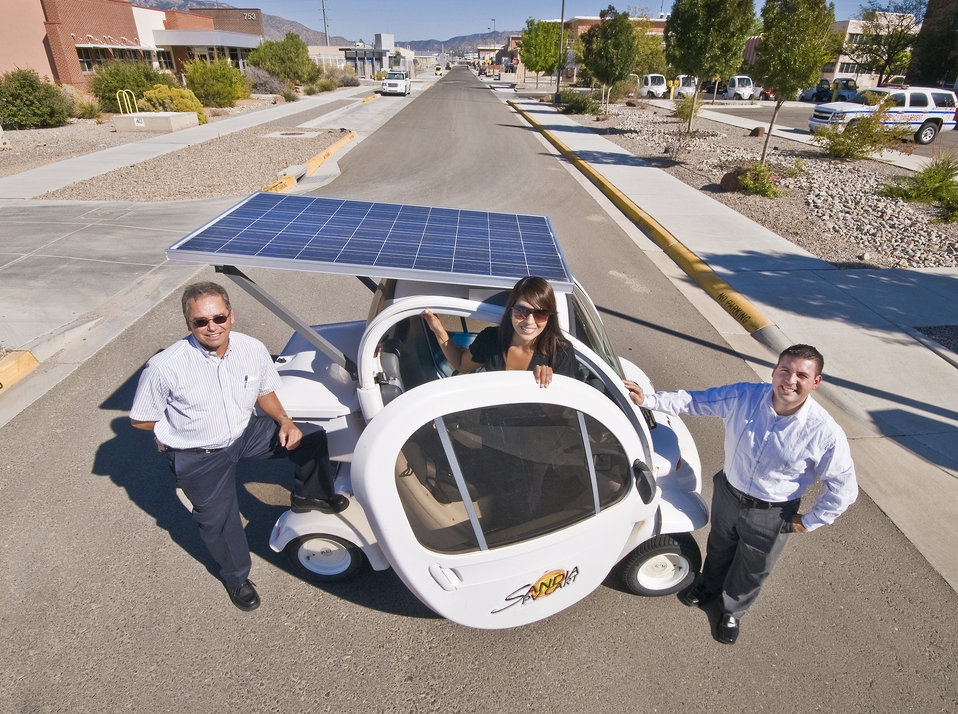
GEM cart at Sandia.

Shown is the Sandia National Laboratory team that developed a photovoltaic-powered cart that won a 2010 Presidential GreenGov Award. The cart is based on a modified GEM cart, familiar around Sandia's Tech Area 1.